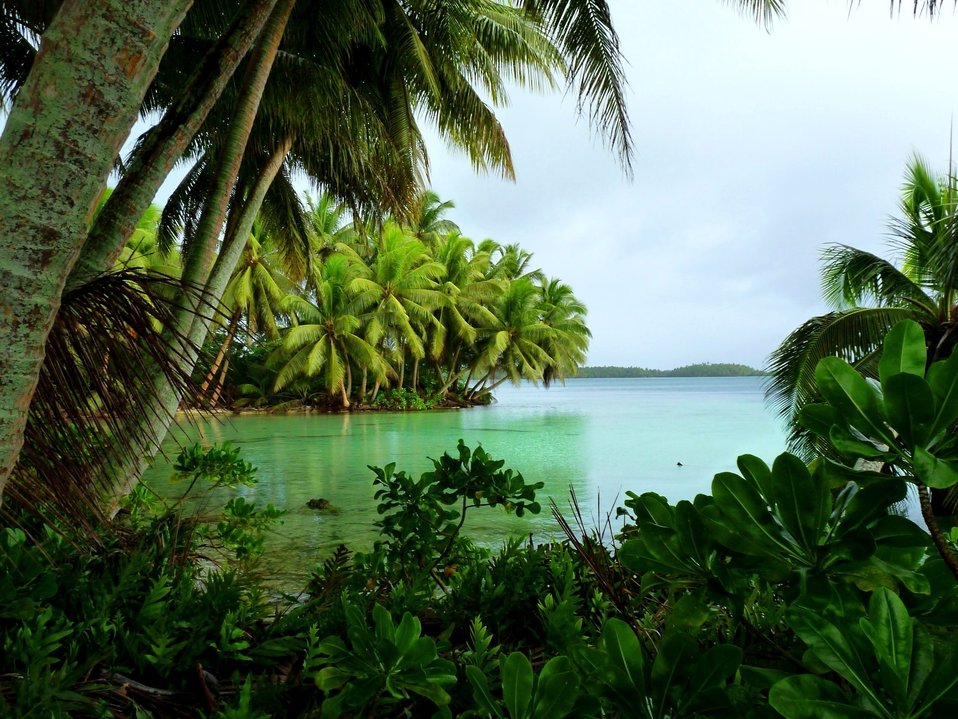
Strawn Island at Palmyra Atoll NWR

Palms drape over clear water at Strawn Island, one of more than 50 islets at Palmyra Atoll National Wildlife Refuge in the Pacific.